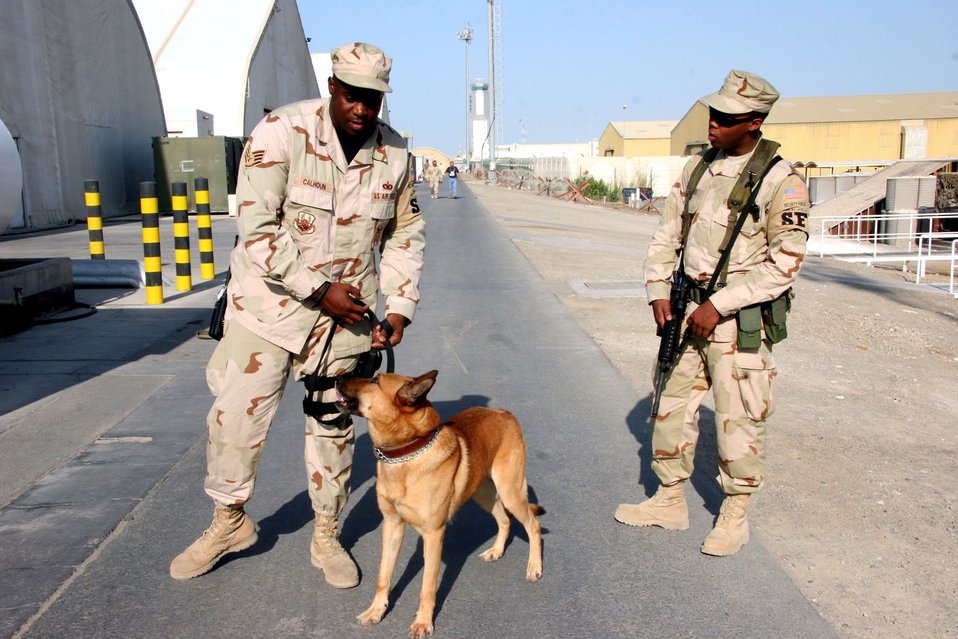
Brothers spent first deployment together

Staff Sgt. Malik Calhoun, 380th Expeditionary Security Forces Squadron K-9 handler, and Arco, his patrol and explosive detection dog, begin a vehicle sweep while his brother Airman 1st Class Dandre Bufford, 380th ESFS, provides overwatch during an explosive detection training scenario Nov. 27. Airman Bufford plans to become a K-9 handler too.